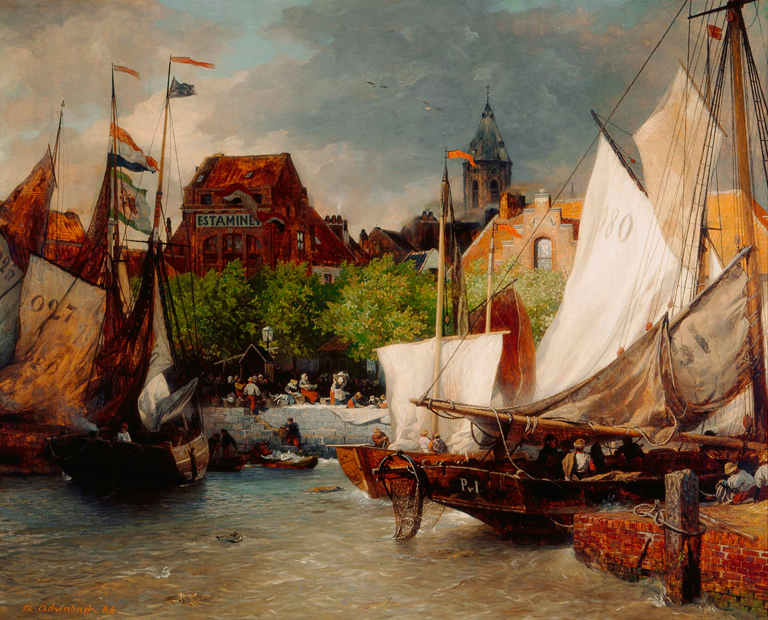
Andreas Achenbach - Fischmarkt in Ostende